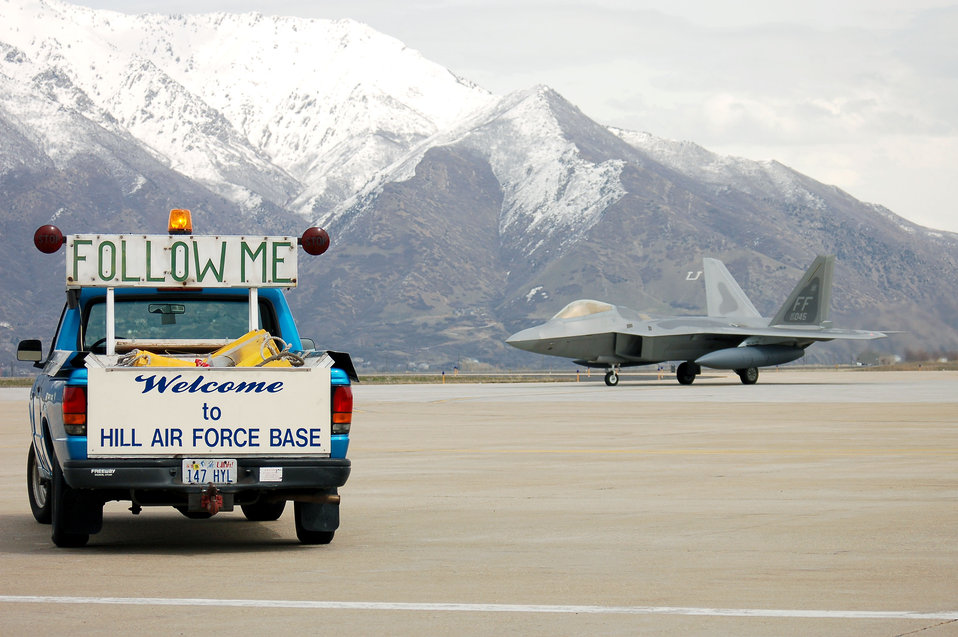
Hill begins modifications on F-22A Raptor

An F-22A Raptor arrives at Hill Air Force Base, Utah, on Sunday, April 9, 2006, for minor modifications. Members of the 309th Maintenance Group will modify this, the first of 18 F-22s that will receive various modifications at Hill.